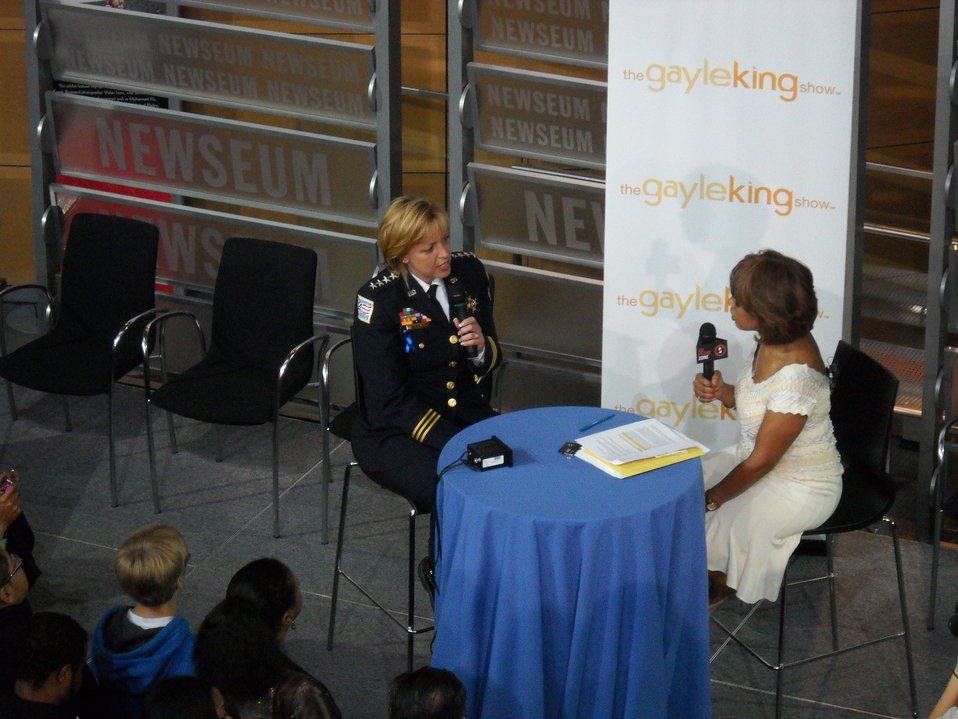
National No Phone Zone Day Newsum Washington, DC April 30, 2010 032